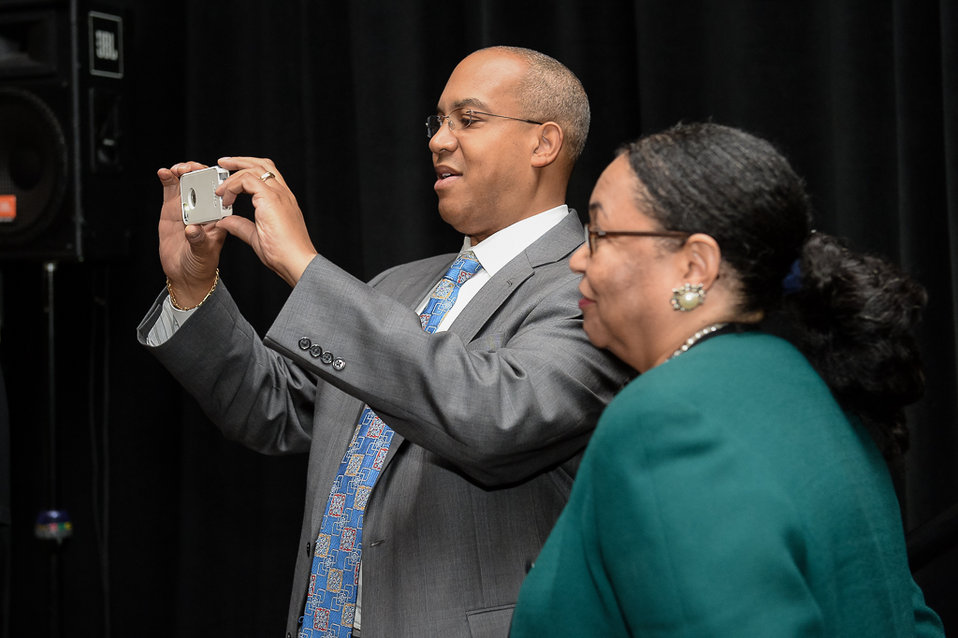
OSDBU Conf 4